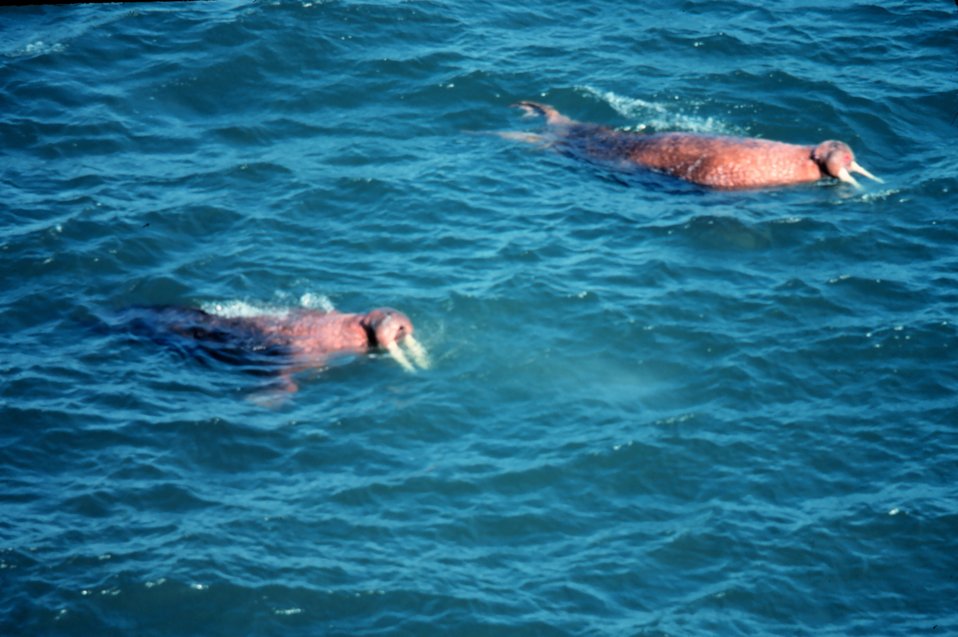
Walrus - Odobenus rosmarus divergens - swimming close to shore.